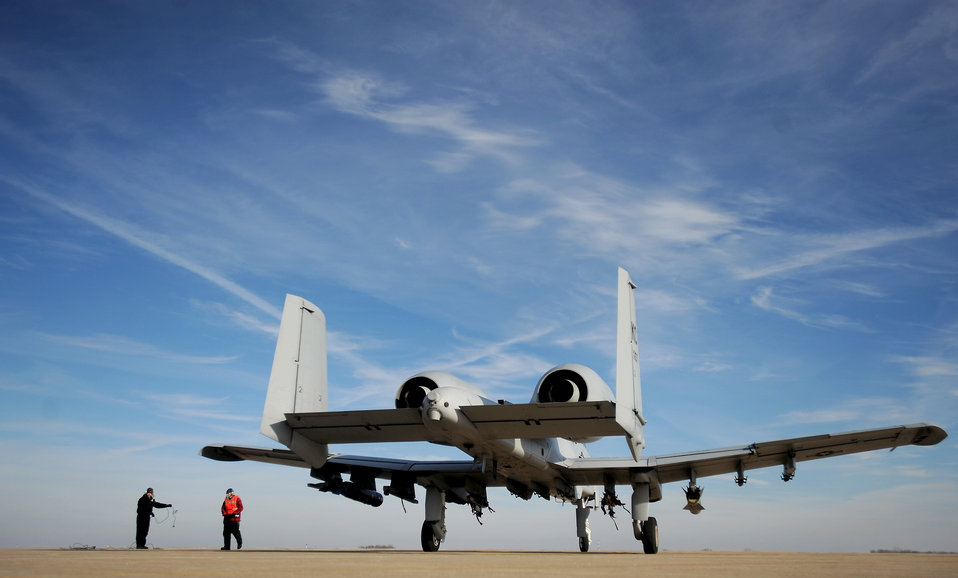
Hot pit refueling

Technicians clear the ramp as an A-10 Thunderbolt II taxies out of the hot pit after a hasty refuel Dec. 8, 2010, at Whiteman Air Force Base, Mo. Hot pit refueling is a procedure usually performed in a combat situation to rapidly refuel aircraft while their engines are running to thrust pilots back into the fight. The crews from the Air Force Reserve Command's 442nd Fighter Wing are practicing this procedure to keep their skills sharp.